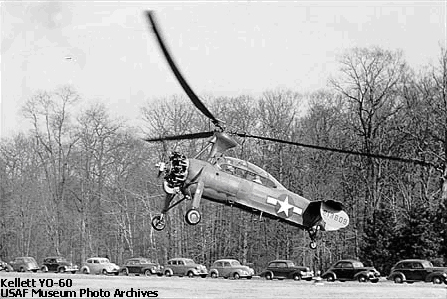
XO-60 Autogiro

The Kellett XO-60 Autogiro was an uncommon aircraft flown by the 50th Fighter Group while it was stationed at Orlando Army Airfield, Fla., in 1942. The 50th FG was the predecessor to the 50th Operations Group, part of the 50th Space Wing at Schriever Air Force Base, Colo.